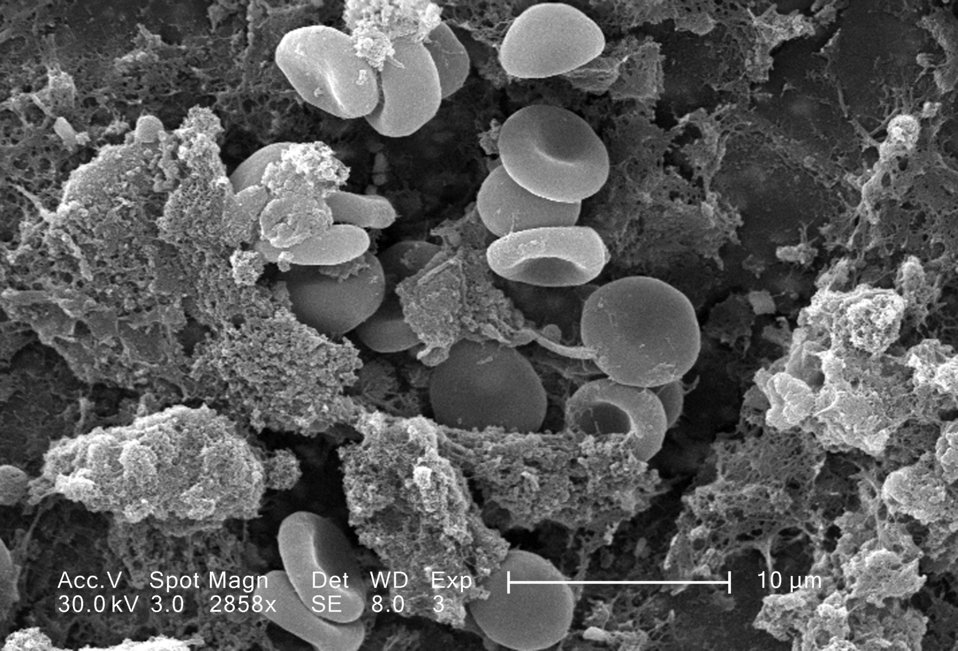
This scanning electron micrograph (SEM) depicted a number of red blood cells found enmeshed in a fibrinous matrix on the luminal surface of an indwelling vascular catheter; Magnified 2858x.